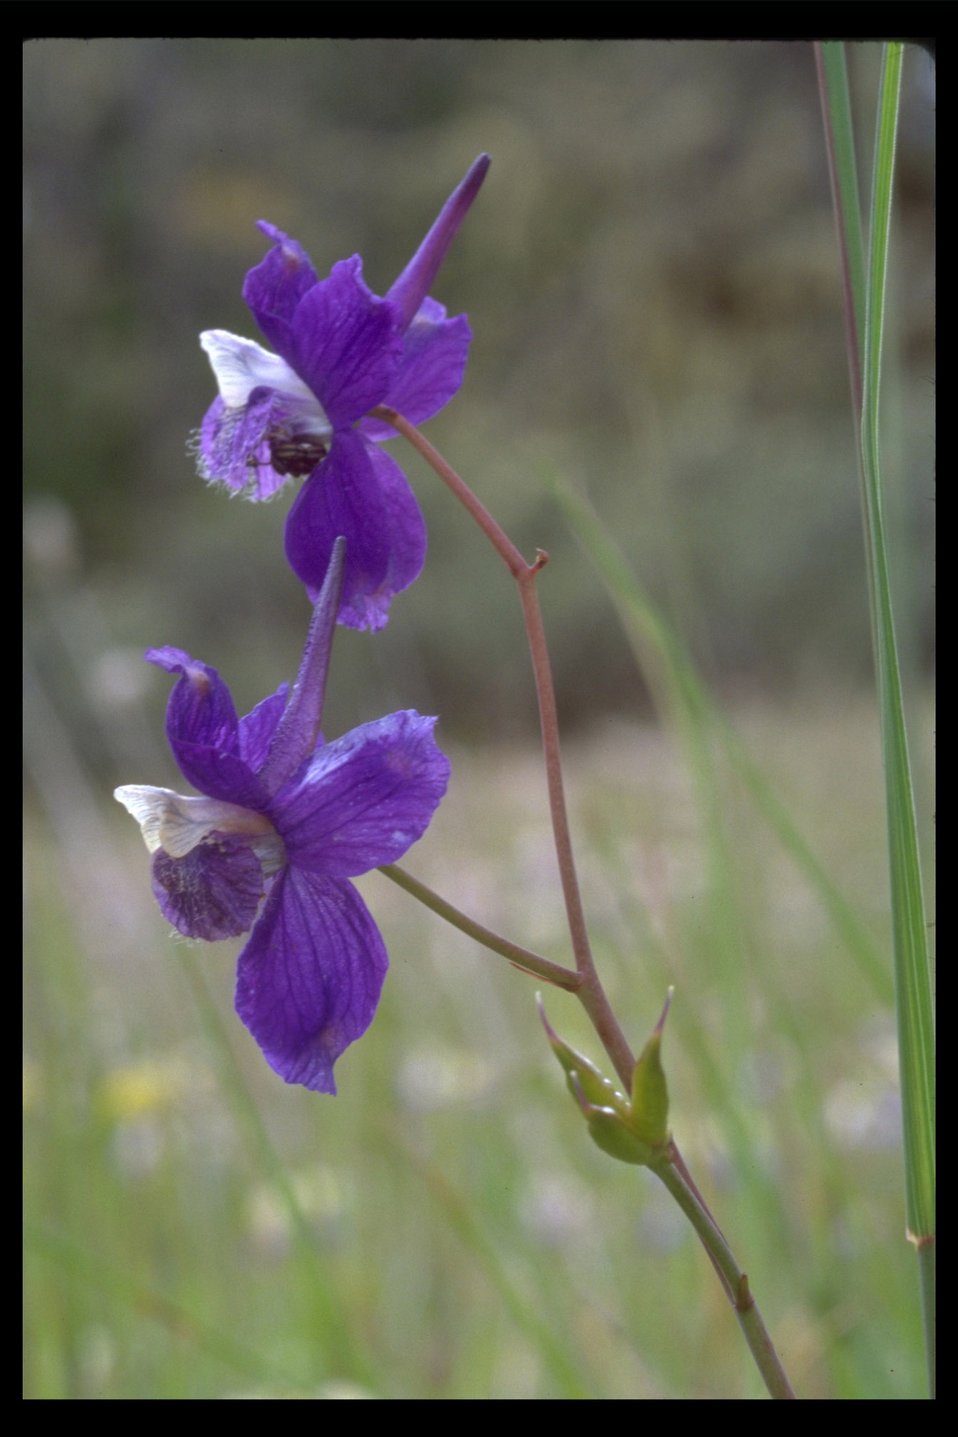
Close up of Larkspur (Delphinium sp.) found along Tiller Highway.